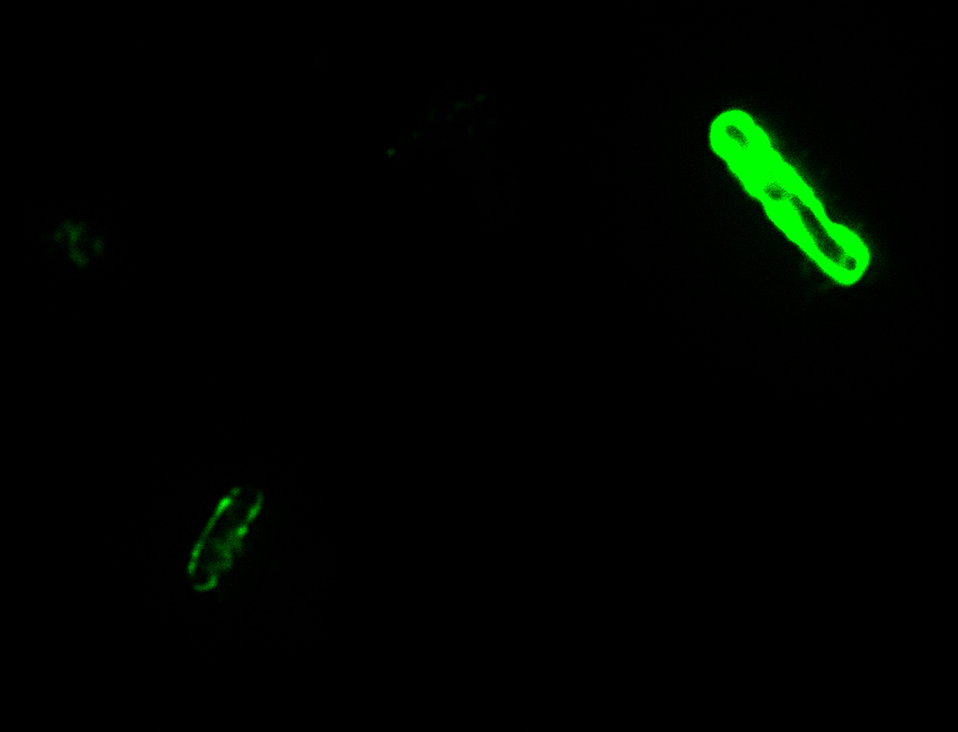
B. anthracis Direct Fluorescent Antibody (DFA) capsule stain.